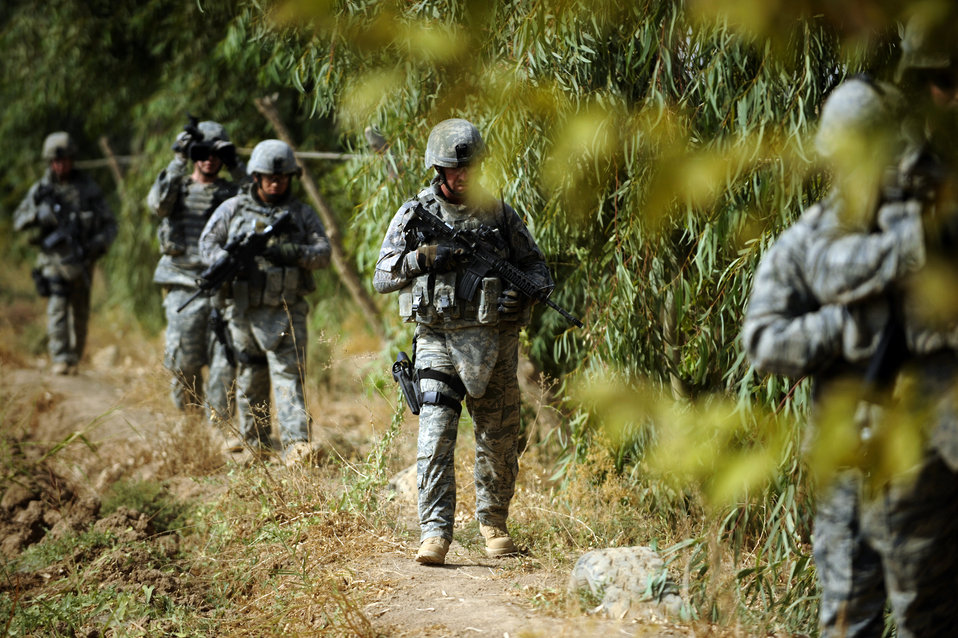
Airmen patrol outside to protect inside

Airmen from the 532nd Expeditionary Security Forces Squadron search a field during a force protection patrol Oct. 17, 2009, outside Joint Base Balad, Iraq. Members of the 532nd Expeditionary Security Forces Squadron patrol to provide a security presence intended to deter anyone who would do harm to the people who live and work at the base.